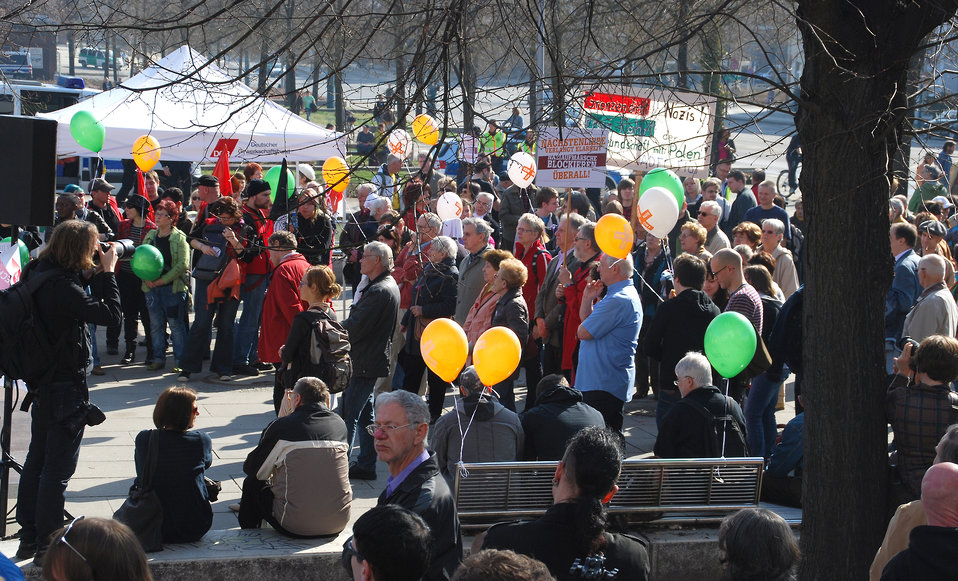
Proteste gegen den Nazi-Aufmarsch am 24.3.2012 in Frankfurt (Oder)